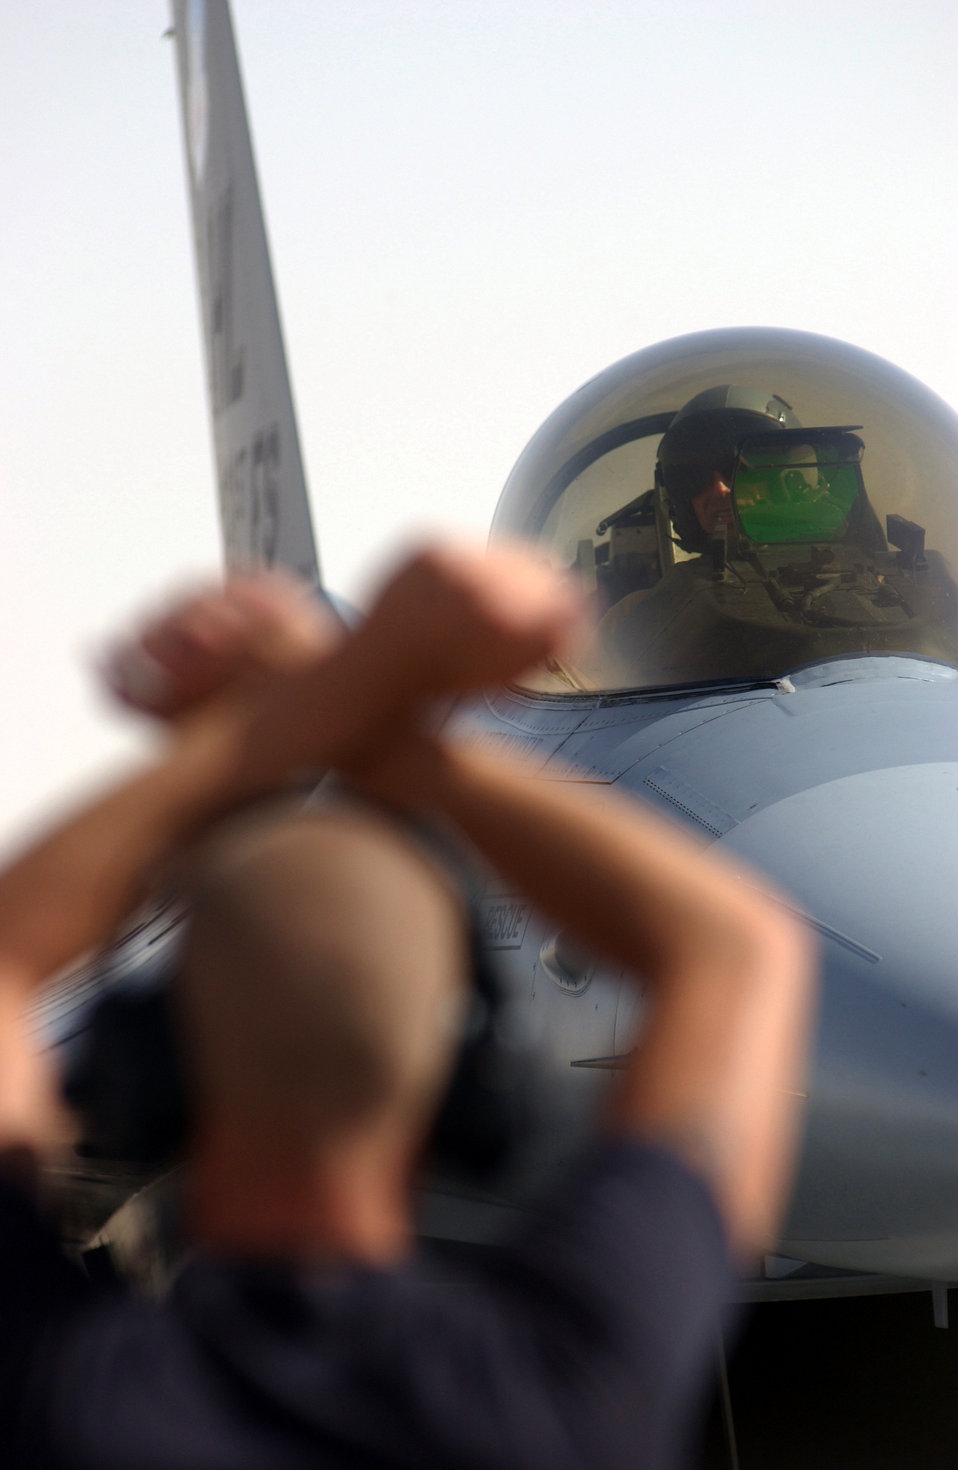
Stop here

OPERATION IRAQI FREEDOM -- A crew chief signals a pilot to park his F-16 Fighting Falcon at a forward-deployed location in Southwest Asia. Airmen and aircraft from Hill Air Force Base, Utah, are currently deployed supporting Operation Iraqi Freedom.